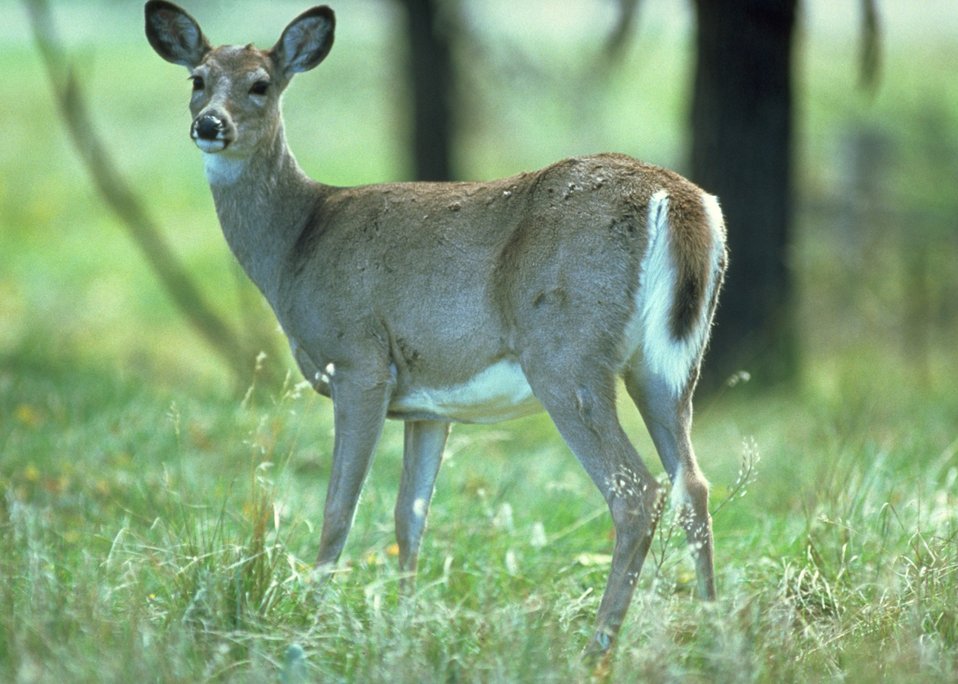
Alerted doe in the thick brush.